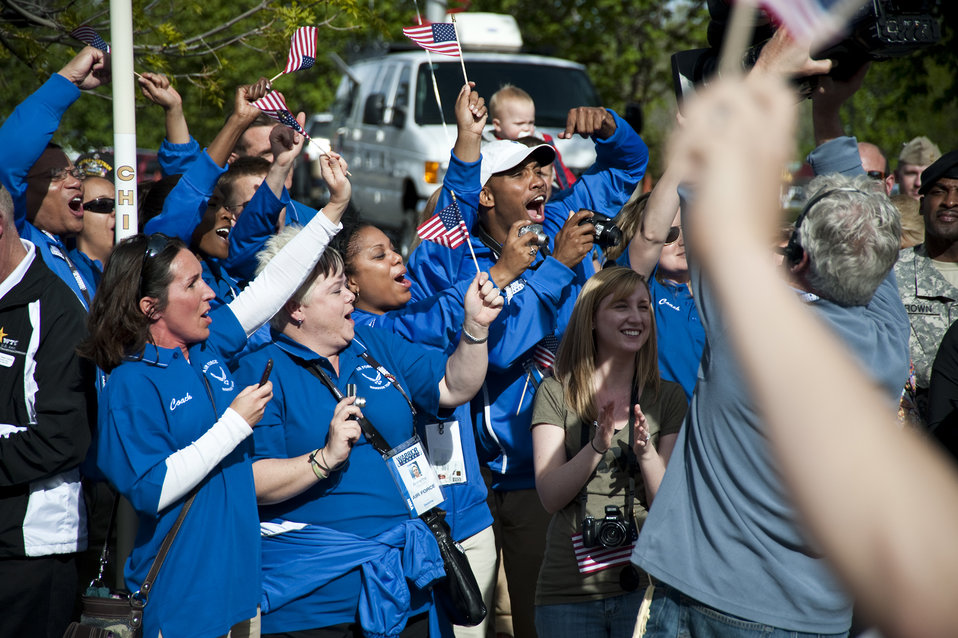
Ceremonies kick off 2011 Warrior Games

Supporters, friends and family members cheer on the Air Force team during the 2011 Warrior Games opening ceremony May 16, 2011, at the U.S. Olympic Training Center in Colorado Springs, Colo.